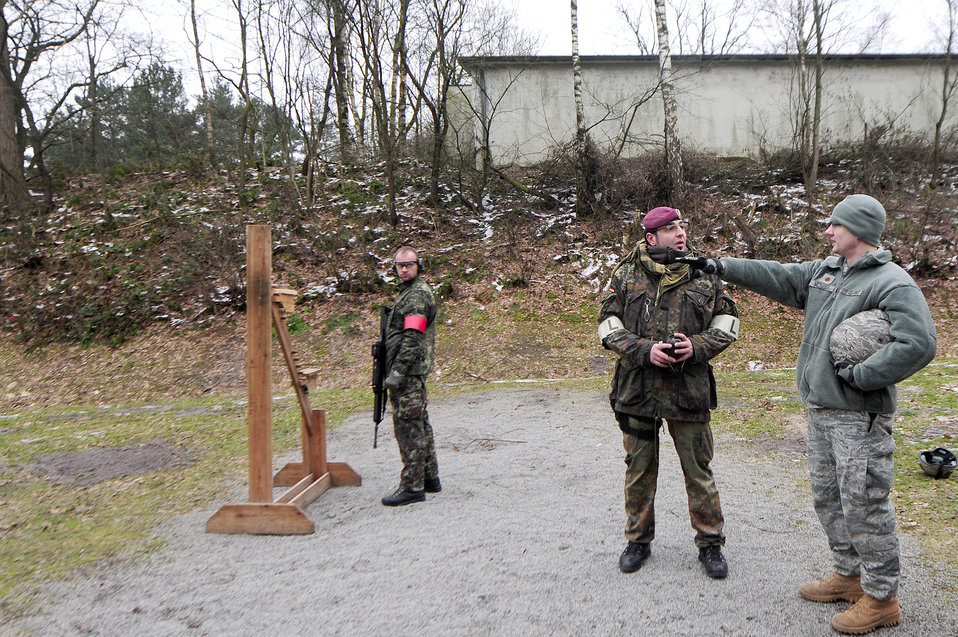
435th CRG at Schutzenschnur

Maj. Jason Medsger receives weapon familiarization training by personnel from the 31st German Airborne Brigade Feb. 18, 2011, in Oldenburg, Germany. Members from the 435th Contingency Response Group attended the German shooting competition,